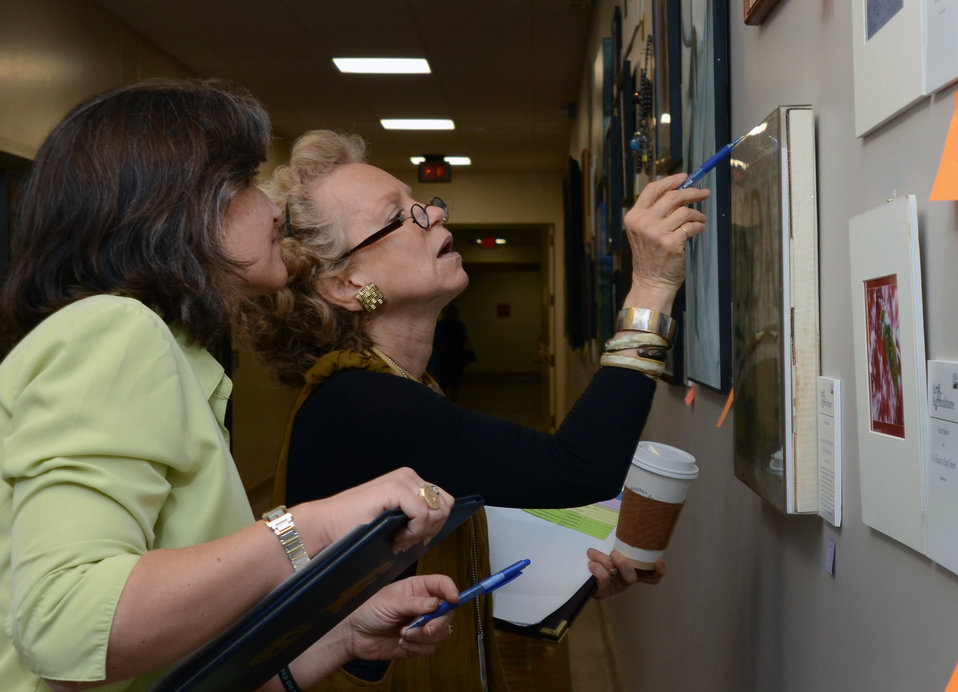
Farar Elliott, Office of Art and Archives Chief from the House of Representatives (left) and Marjorie Share, Independent Museums and Institutions Professional (right) judge the U.S. Department of Agriculture (USDA) Art and Agriculture competition held in the USDA South Building, Washington, D.C. on Thursday, May 10, 2012.